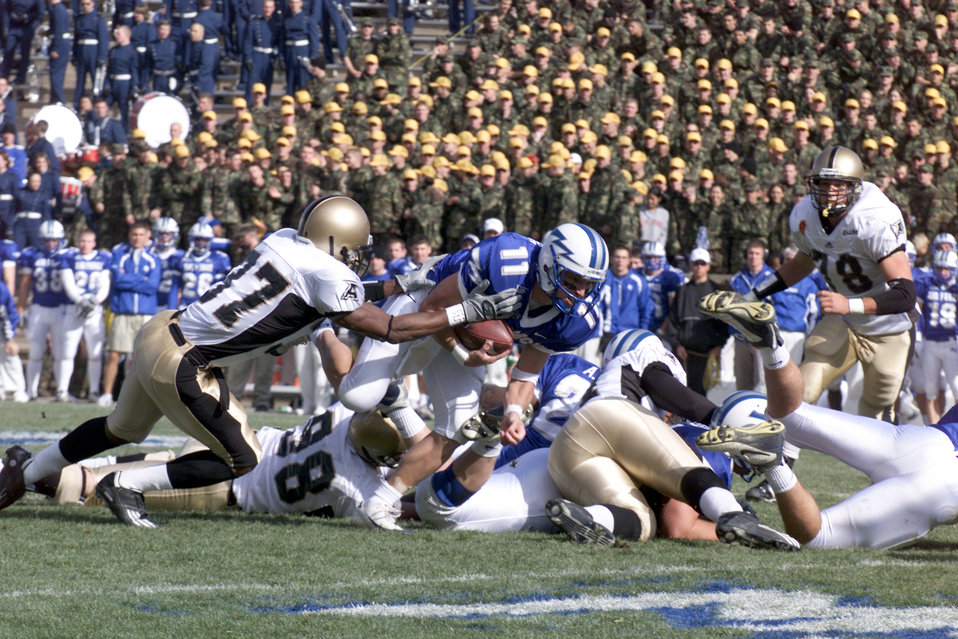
Air Force crushes Army, 31-3

U.S. AIR FORCE ACADEMY, Colo. -- Falcons quarterback Chance Harridge plunges forward for a first down at midfield. The senior ran for 80 yards and passed for 71 more, during the academy's 31-3 victory over Army on Nov. 8. The win improves the Air Force record to 7-3, while Army falls to 0-10 on the season.